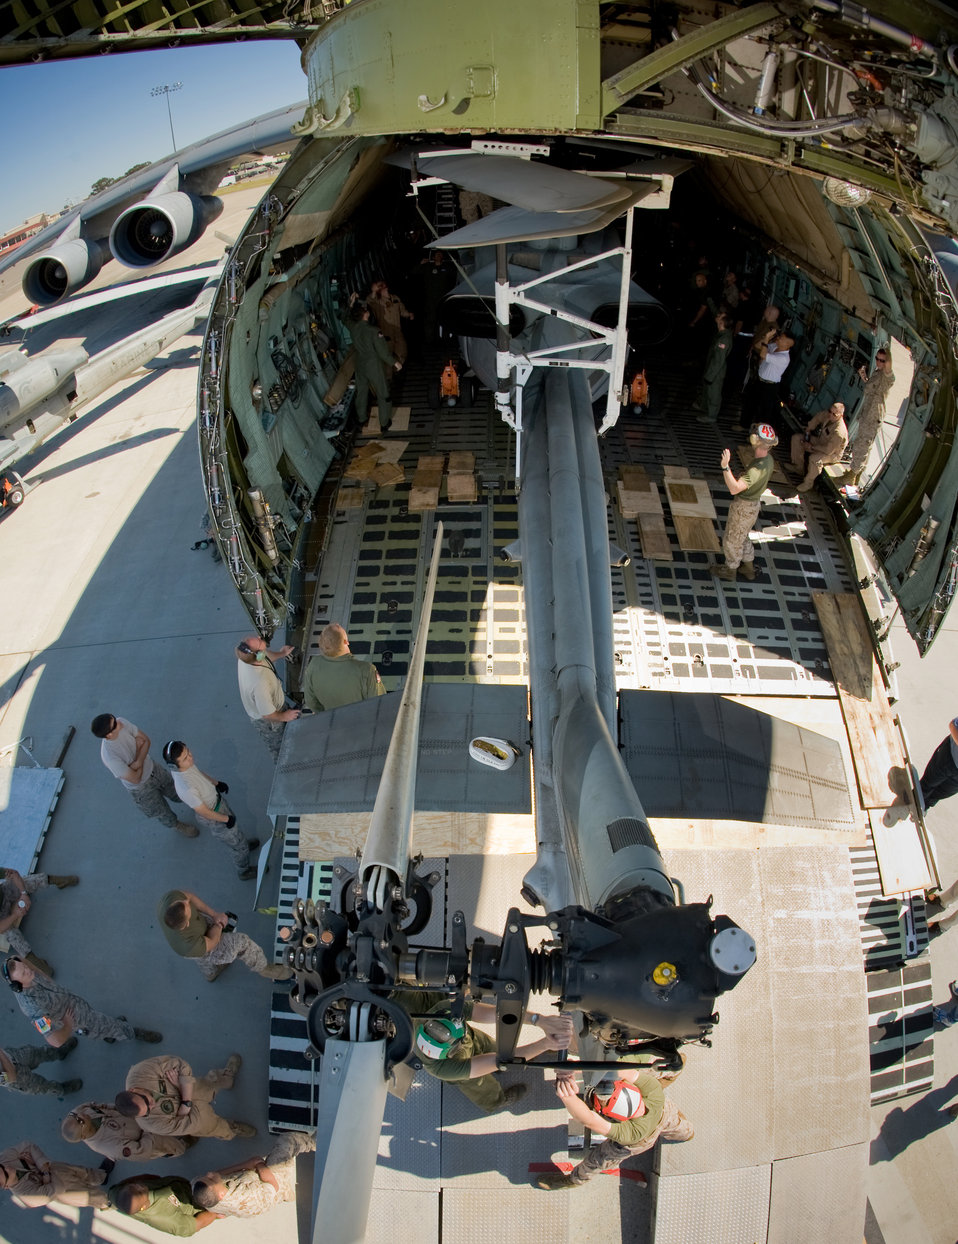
C-5 - helicopter load exercise

A Marine AH-1Z Super Cobra attack helicopter is maneuvered into a C-5C Galaxy. Airmen from Travis Air Force Base, Calif., and Marines from Camp Pendleton, Calif., came together at Travis AFB April 20 to determine how the helicopter best fit into the cargo bay of the C-5 and how many could be loaded at one time. The goal is to get helicopters into the area of responsibility faster and ultimately into the fight.